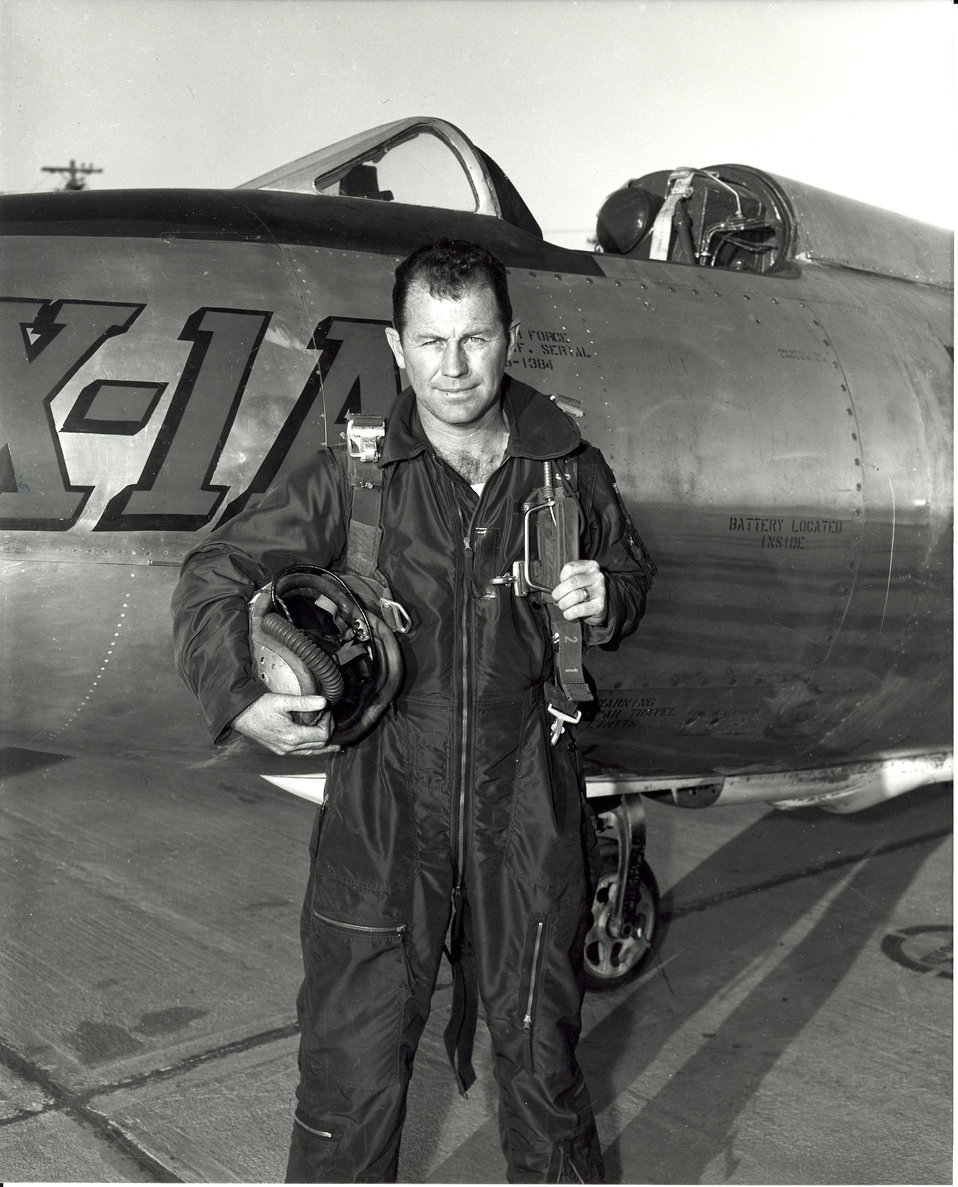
Maj. Charles